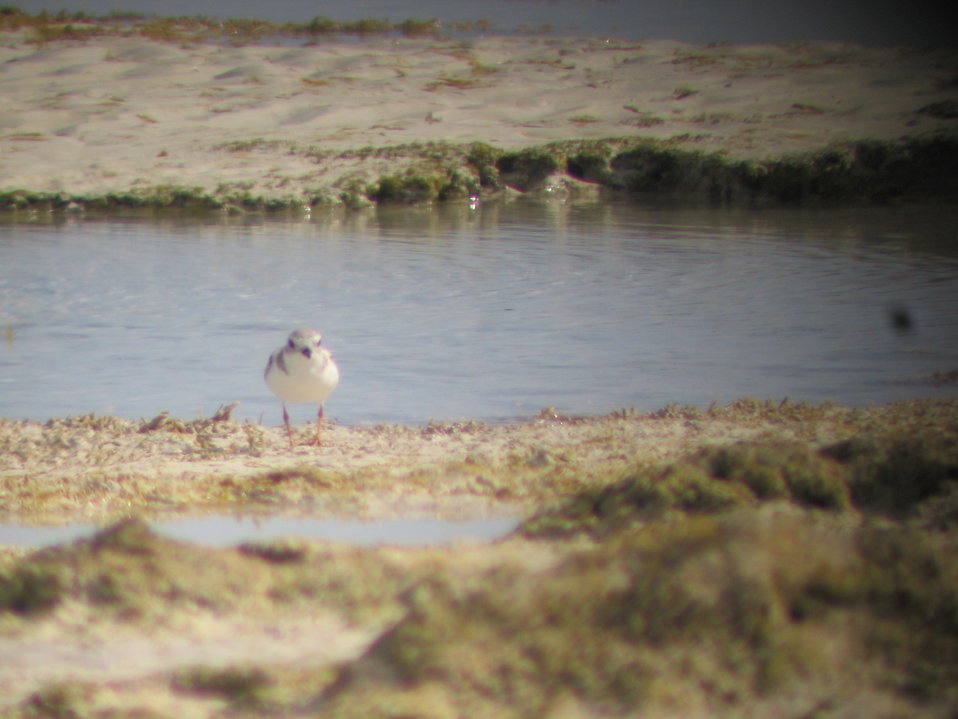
Piping plover foraging in rocky intertidal zone

Photo taken at South Andros Island.